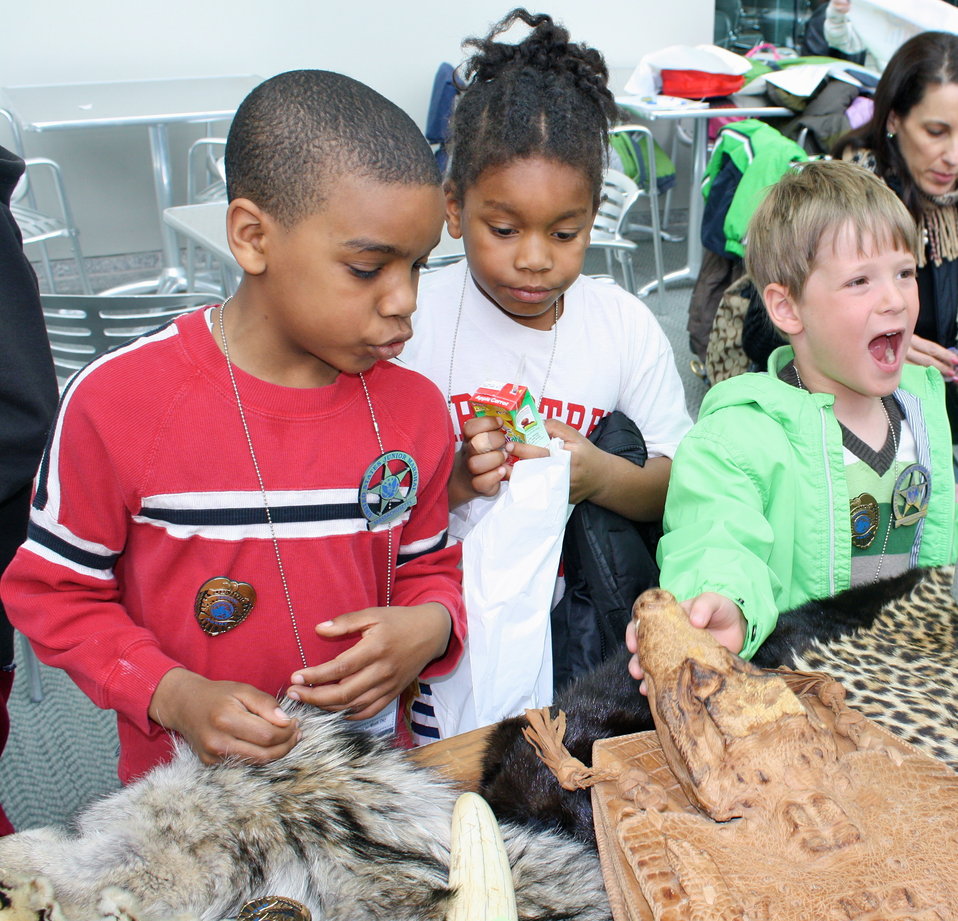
Kids and Reptile Purse